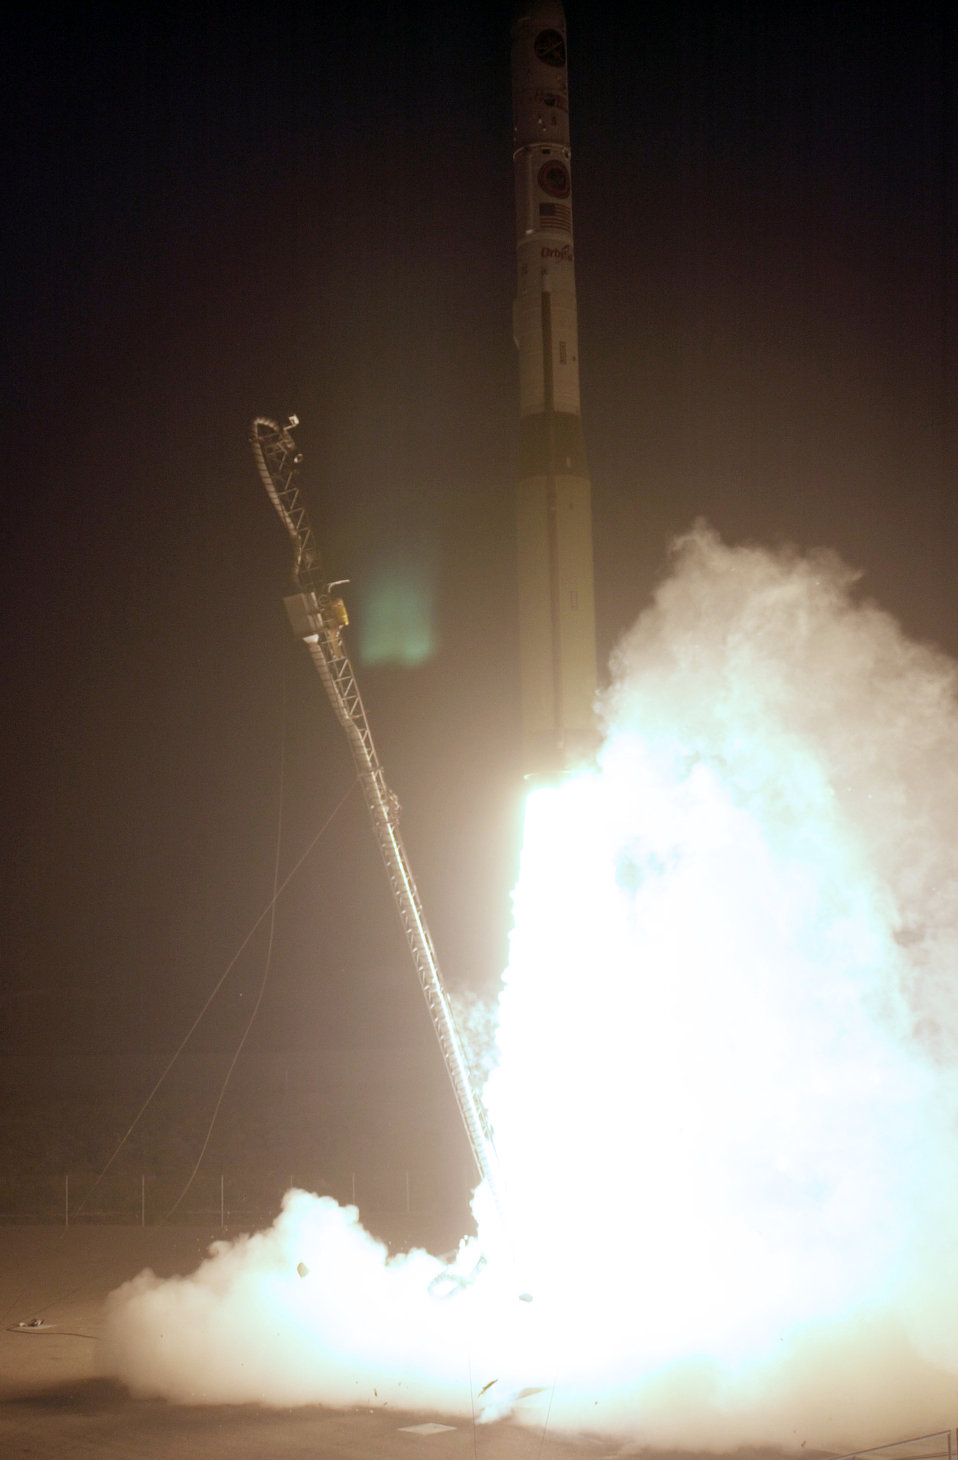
Vandenberg launches micro-satellite

VANDENBERG AIR FORCE BASE, Calif. -- The Orbital Sciences Minotaur rocket successfully launches from here April 11. The Minotaur carried the XSS-11 self-maneuvering, micro-satellite into orbit for the Air Force Research Laboratory.